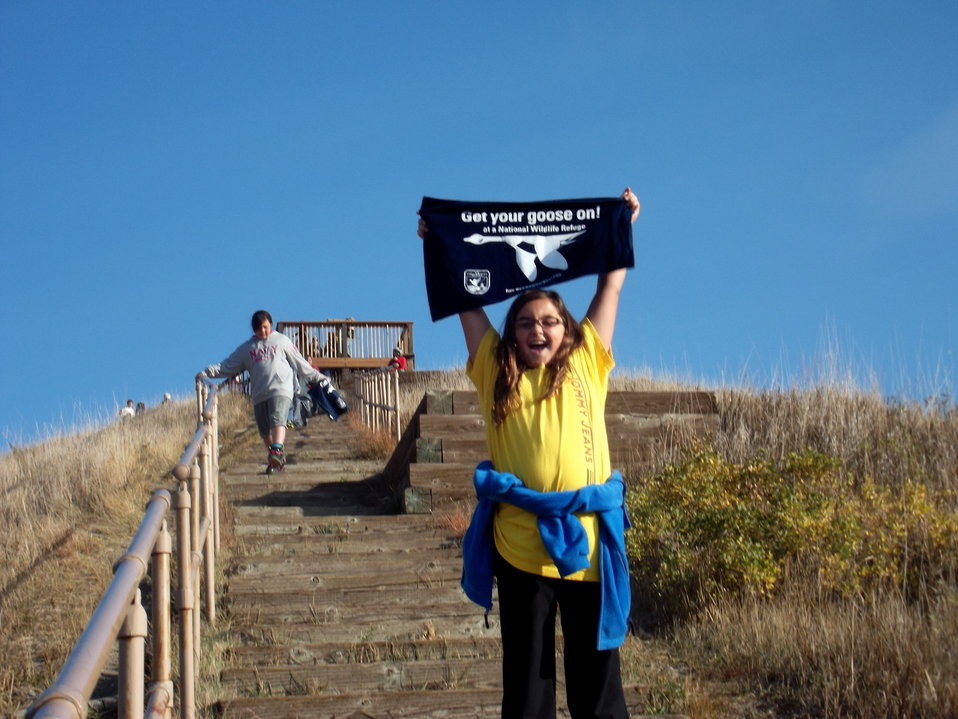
Get Your Goose On!

Photo taken at Sullys Hill National Game Preserve.